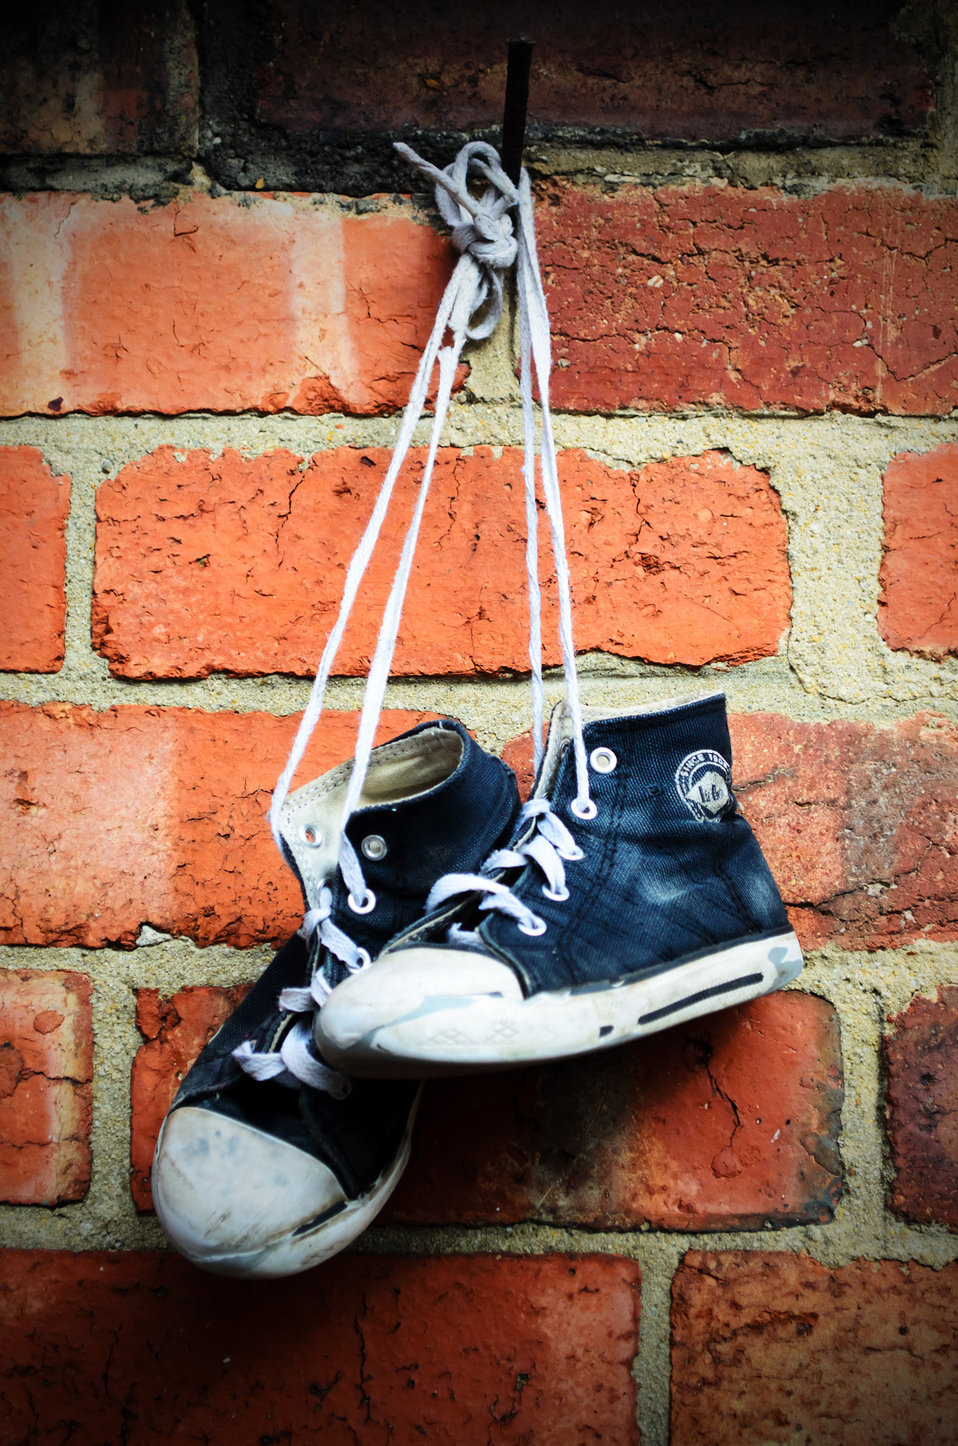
Old sneakers on the wall.